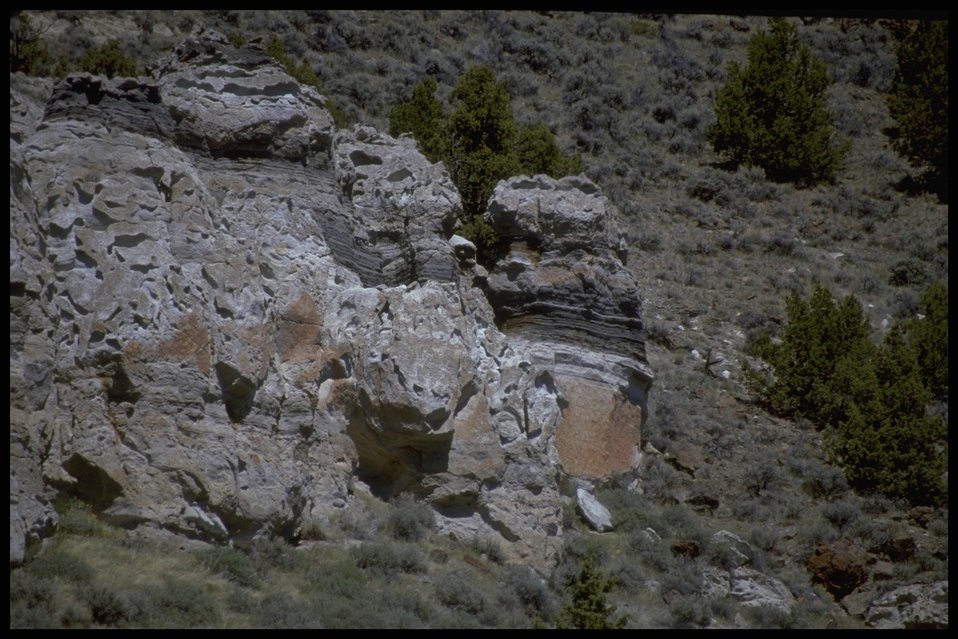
Scenic view of Greaser Canyon, Lakeview District.